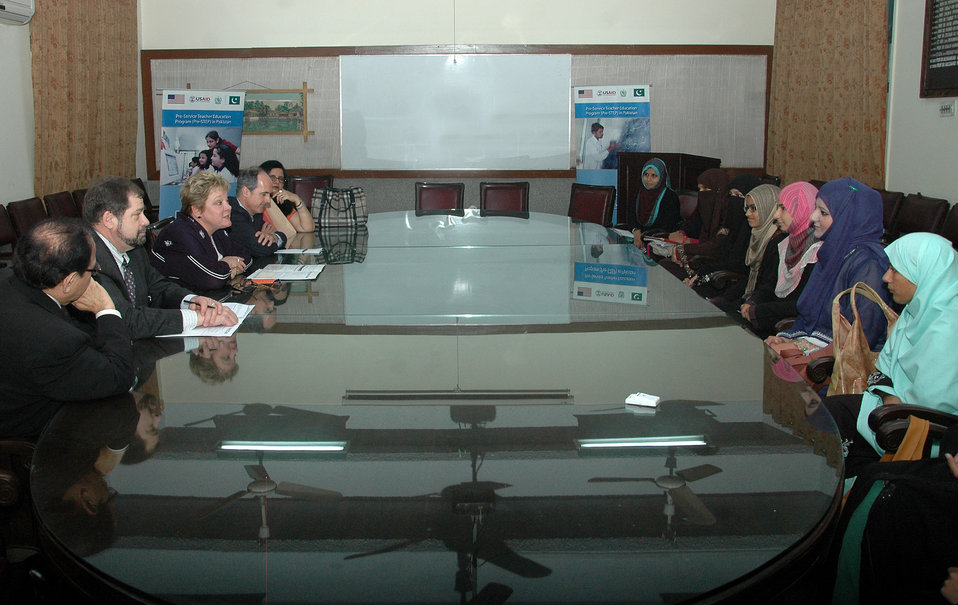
Pre-Service Teachers Education Program (Pre-STEP)

Lahore, February 21, 2012 - Deputy Mission Director USAID/Pakistan, Ms. Karen Freeman talking to the recipients of the scholarships at IER, University of the Punjab.